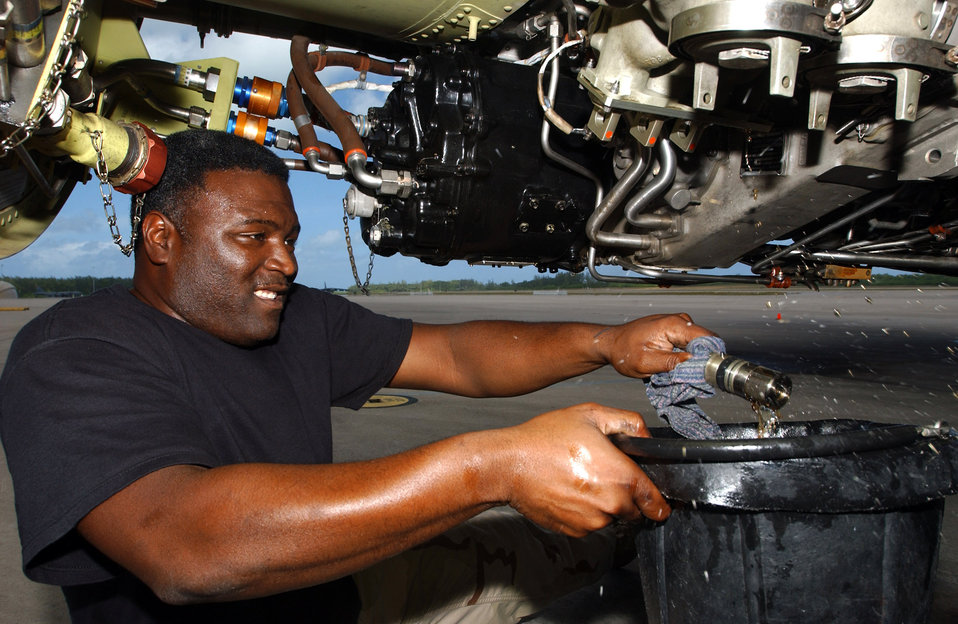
A draining job

OPERATION ENDURING FREEDOM -- Tech. Sgt. Maaliq Love drains oil from an aircraft engine during an inspection at a forward-deployed location. Tanker engines require a complete inspection every 60 hours in flight. Sergeant Love is a KC-135 Stratotanker engine specialist with the 28th Expeditionary Air Refueling Squadron and is deployed from MacDill Air Force Base, Fla.